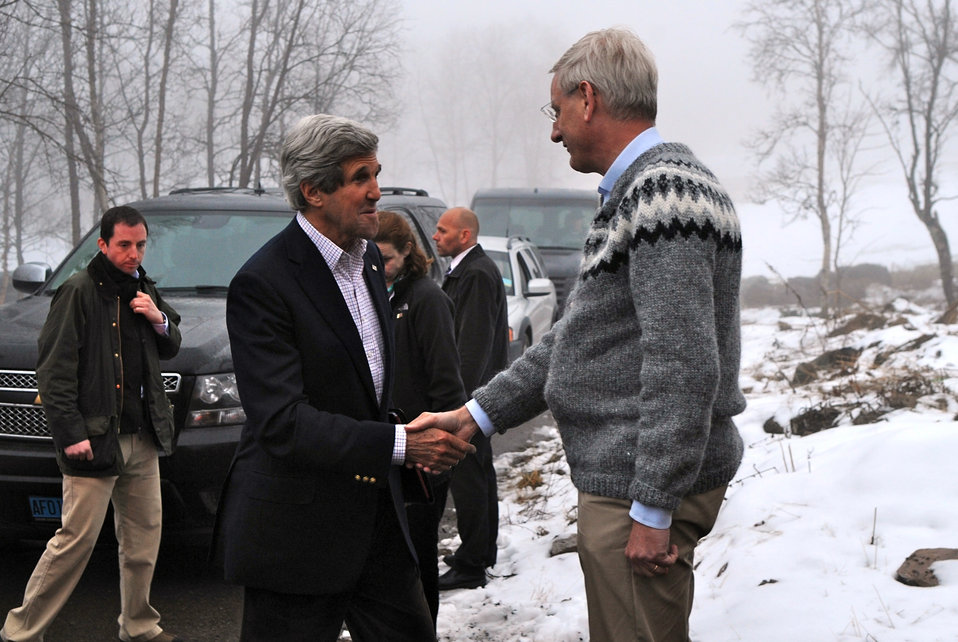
Secretary Kerry Is Greeted By Swedish Foreign Minister Bildt

U.S. Secretary of State John Kerry is greeted by Swedish Foreign Minister Carl Bildt upon arriving at a working dinner with Arctic Council Ministers in Kiruna, Sweden, on May 14, 2013.